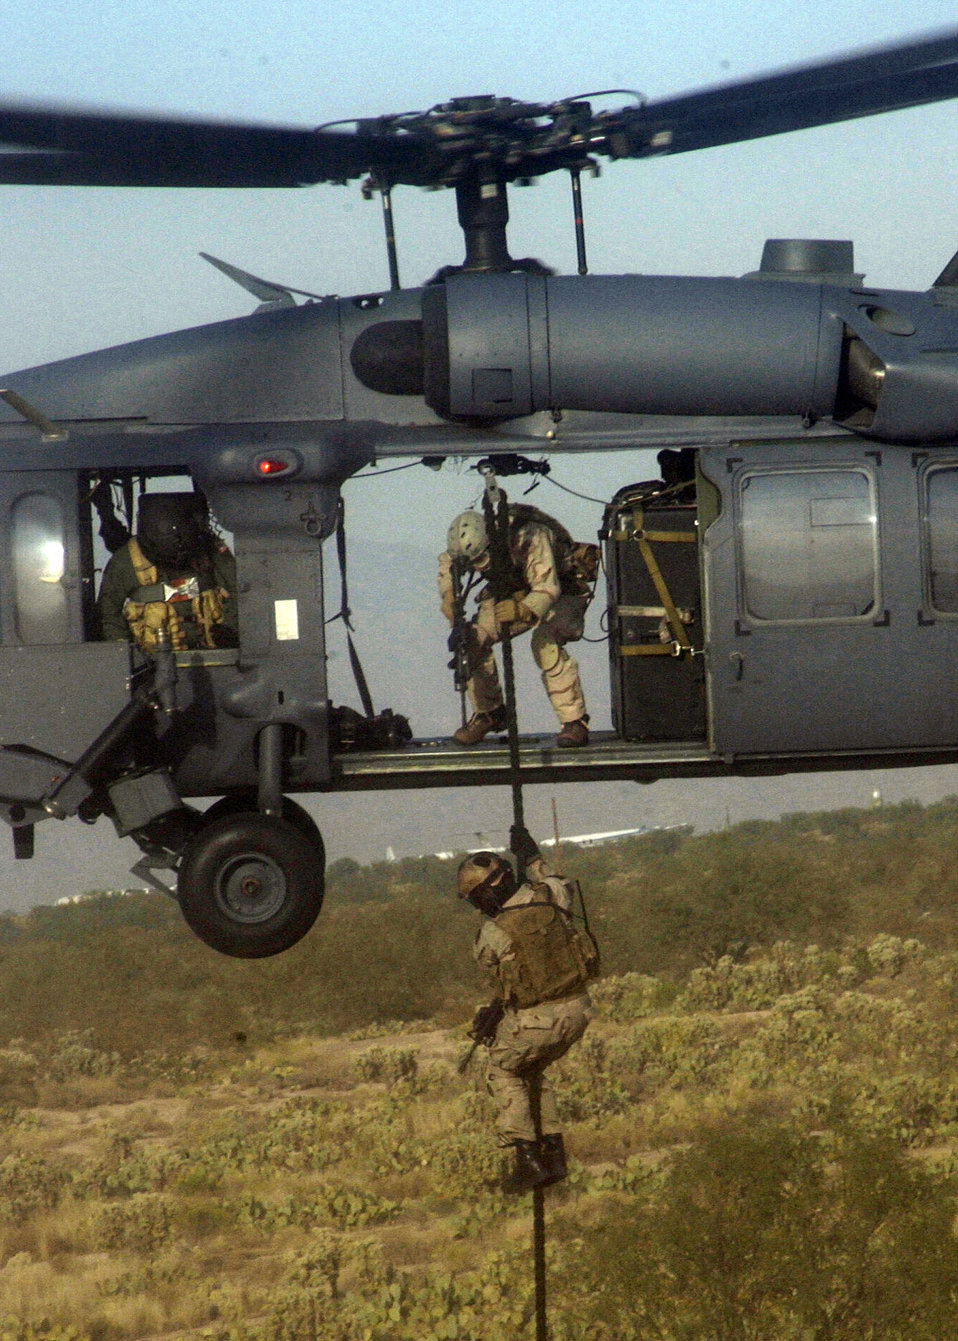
CSAR mission

Pararescuemen from the 306th and 48th Rescue Squadrons fast-rope from an HH-60G Pave Hawk helicopter to retrieve